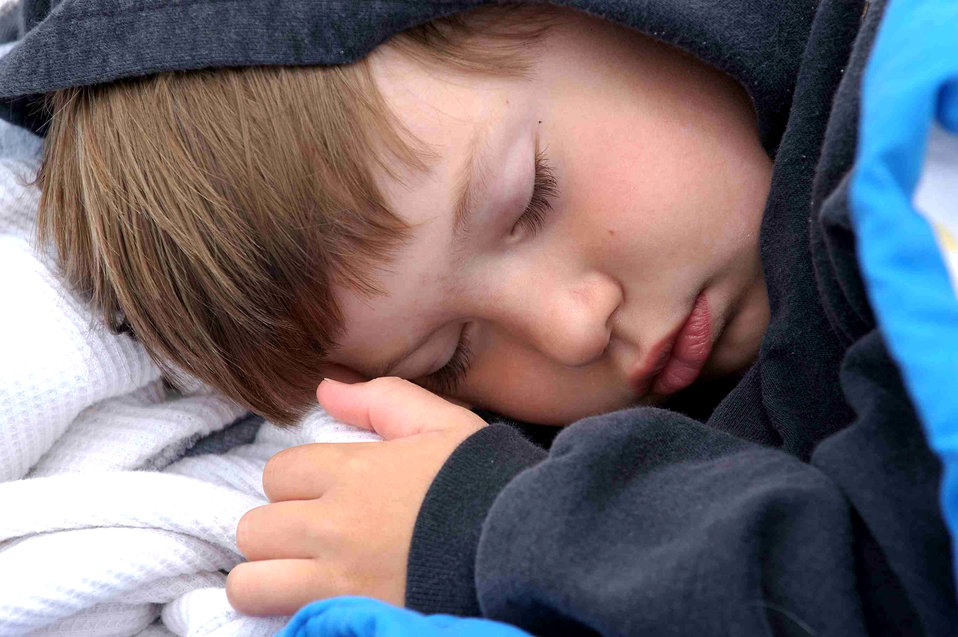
Air Power Over Hampton Roads Air Show 2006

Brian Banks manages to fall asleep during thunderous performances at the annual Air Power over Hampton Roads air show on Sunday, May 7, 2006, at Langley Air Force Base, Va.